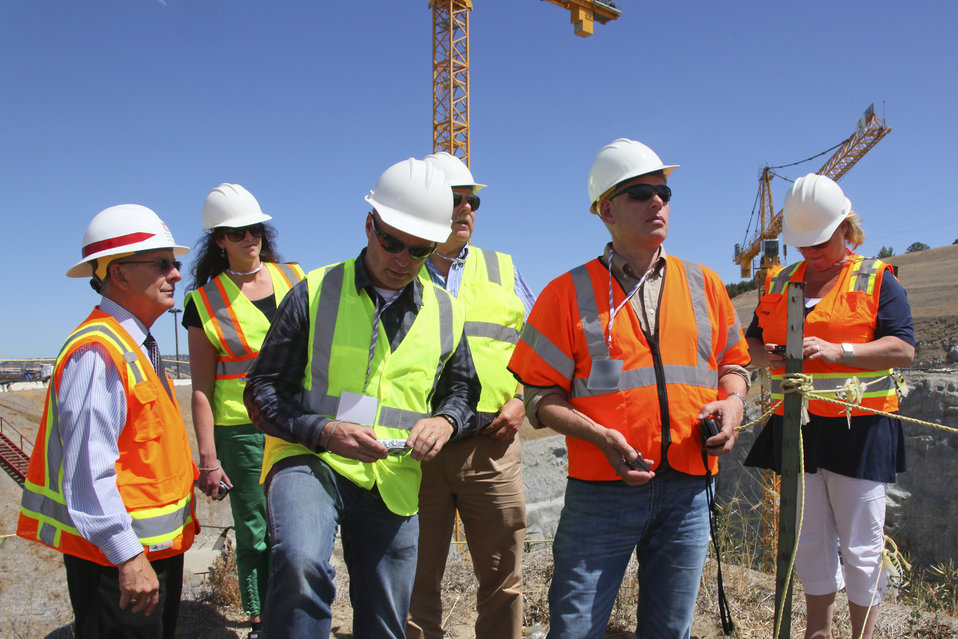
Dutch delegates tour District levees and Folsom project

High atop of the auxiliary spillway construction zone, David Thomas (left) Folsom Joint Federal Project director, guides a group of visiting Dutch delegates June 26, 2012, in Folsom, Calif. The delegates from the Ministry of Transport, Public Works and Water Management learned about the Folsom project and other Corps’ flood risk reduction missions around Sacramento. (U.S. Army photo illustration by Michael J. Nevins / Released)